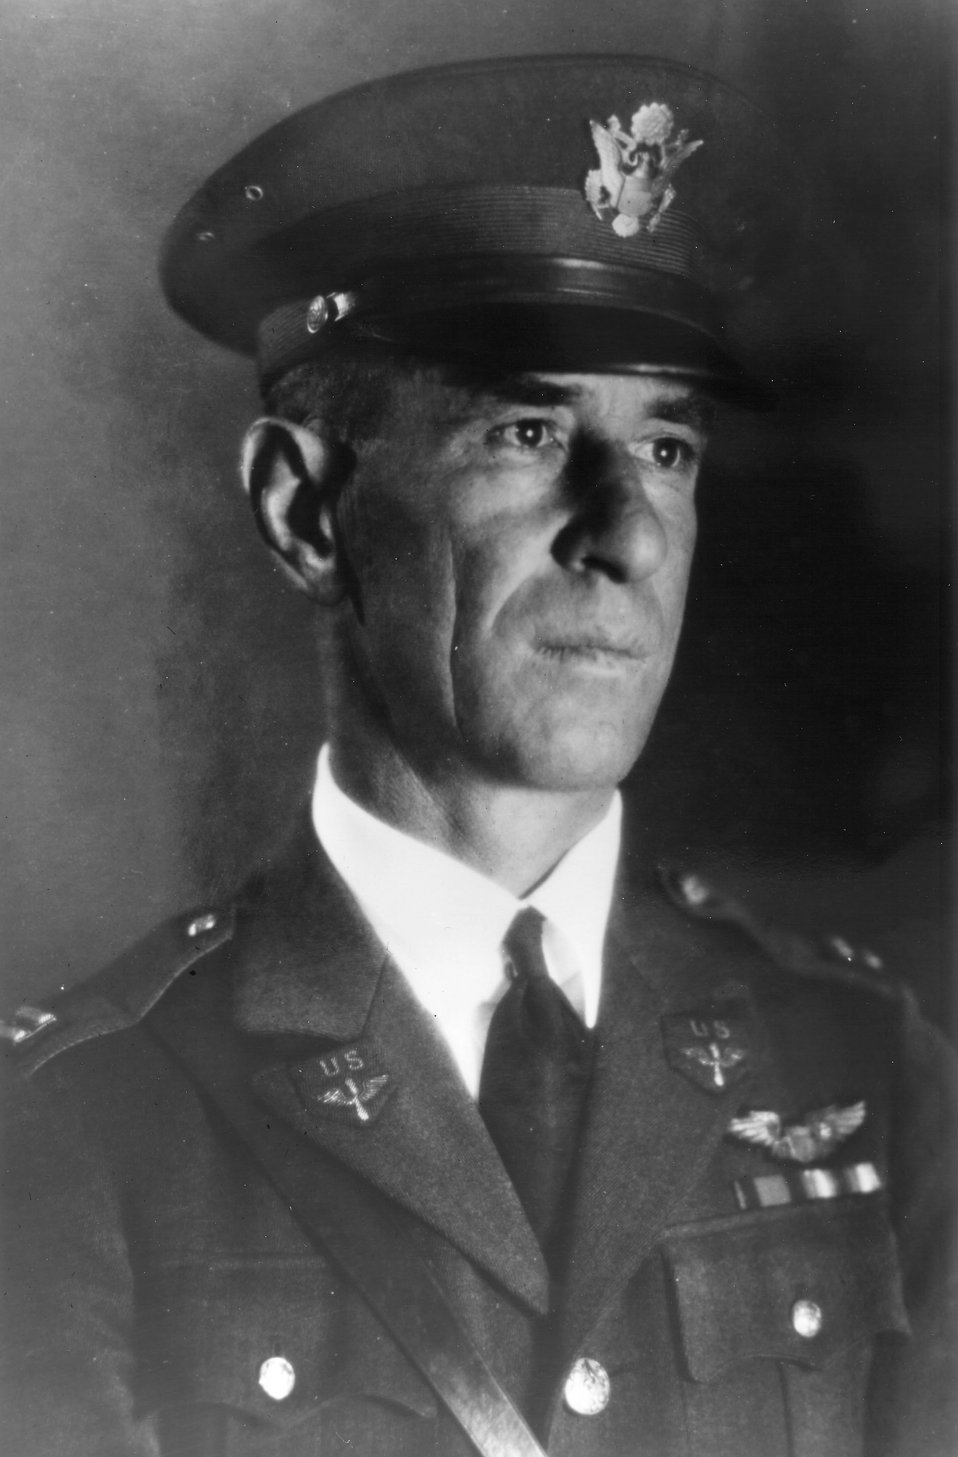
William C. Ocker, Father of Blind Flying

William C. Ocker, the father of